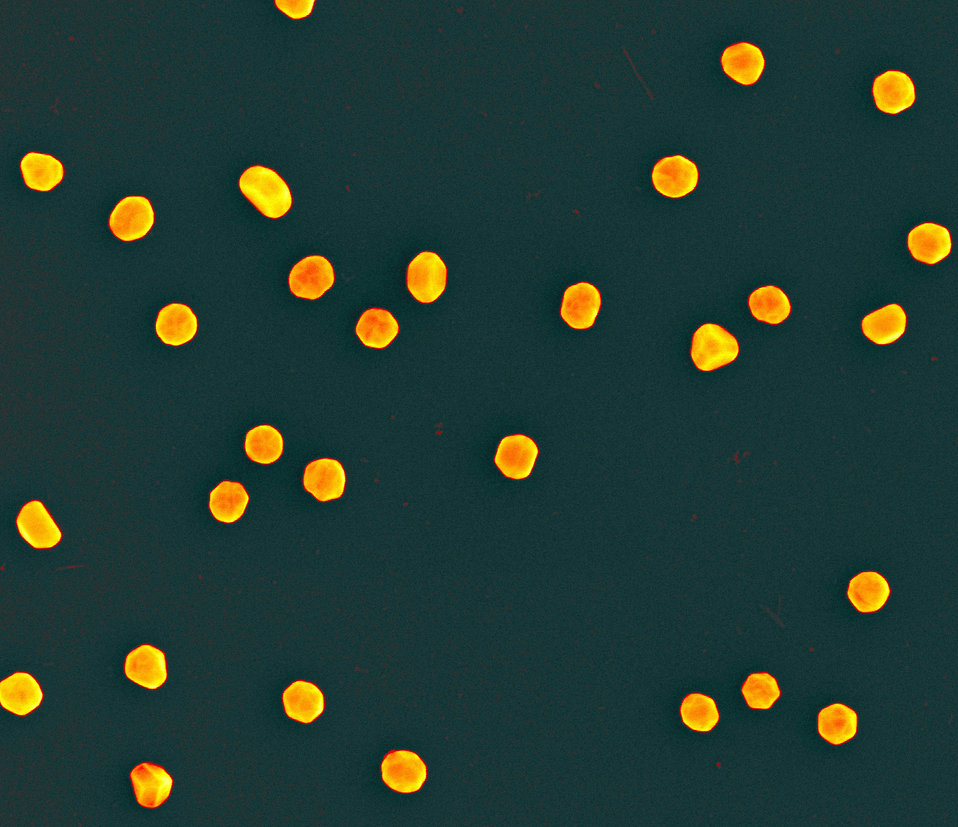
Nanoparticles; scanning electron micrograph

False color scanning electron micrograph (250,000 times magnification) showing the gold nanoparticles created by NIST and the National Cancer Institute's Nanotechnology Characterization Laboratory (NCL) for use as reference standards in biomedical research laboratories.